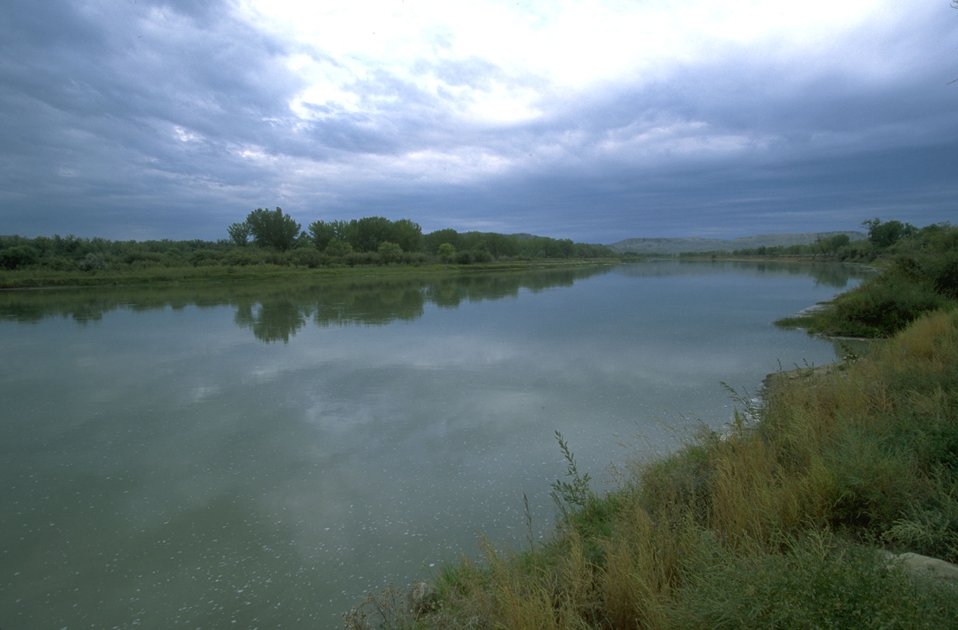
Judith Landing on the Upper Missouri River north of Winifred